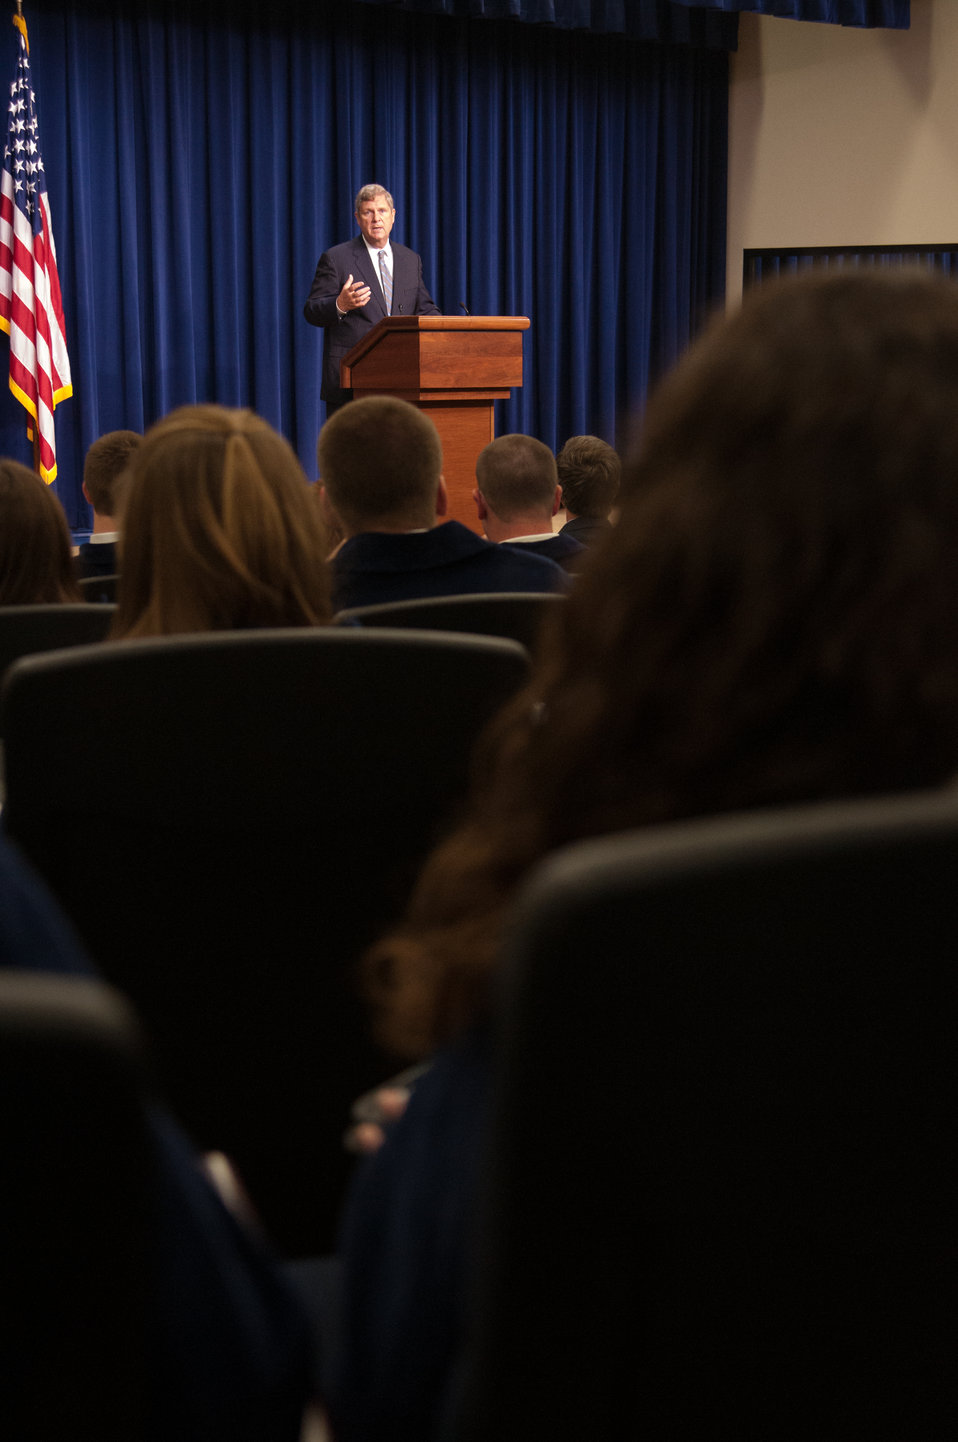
Agriculture Secretary Tom Vilsack speaks at a meeting of the White House Rural Council to an audience of the National State President’s Conference of the FFA on Wednesday, Jul. 24, 2013 in Washington, D.C. Secretary Vilsack took questions from the audience and discussed international, national and agricultural production topics with the FFA State President’s.